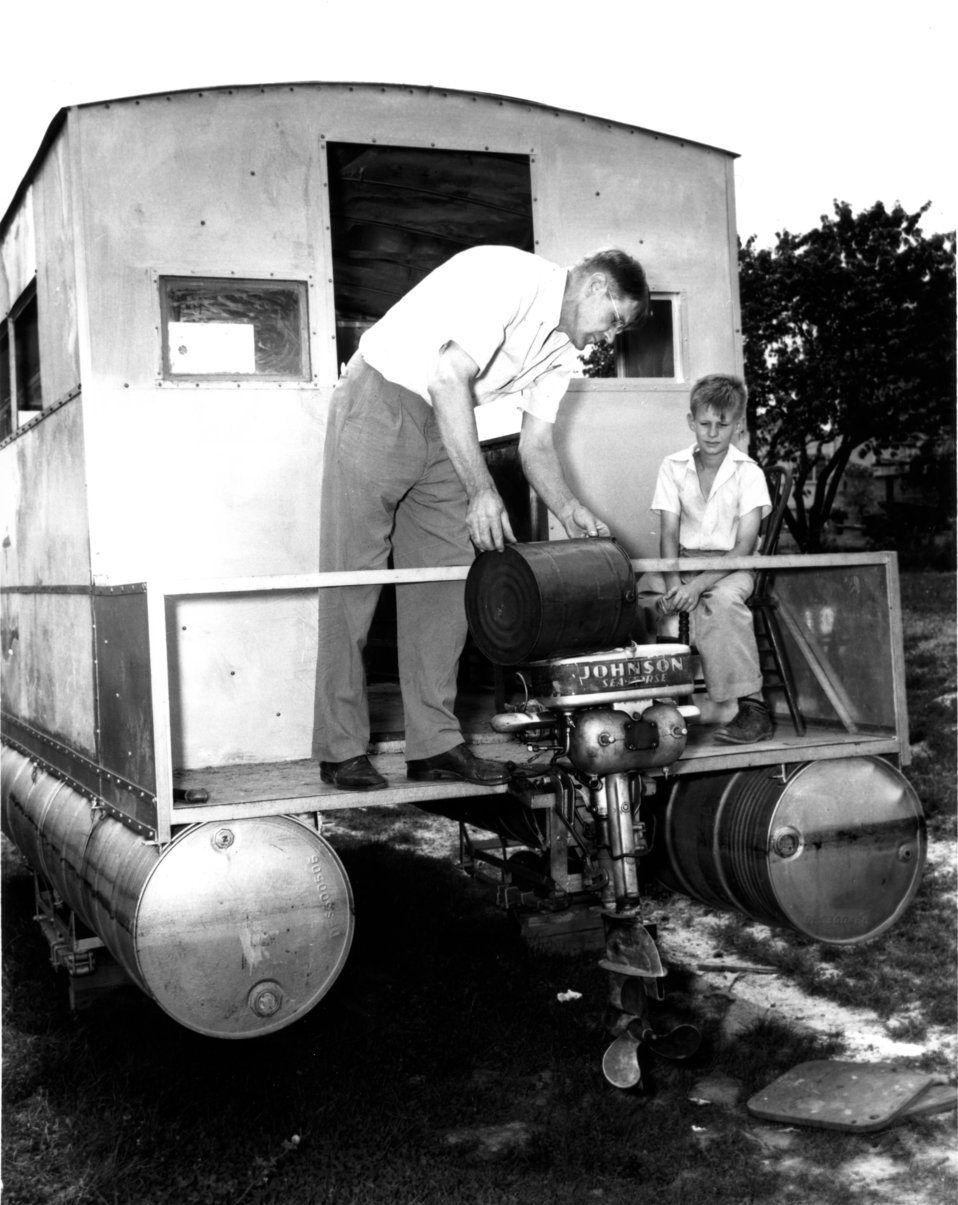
Recreation at Oak Ridge